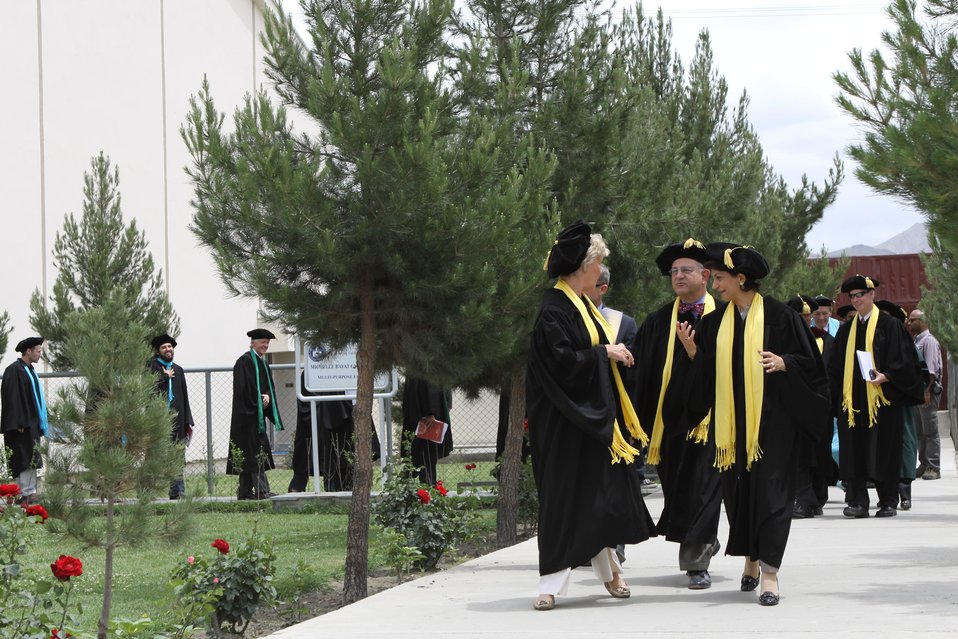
100526 AUAF Graduation 326